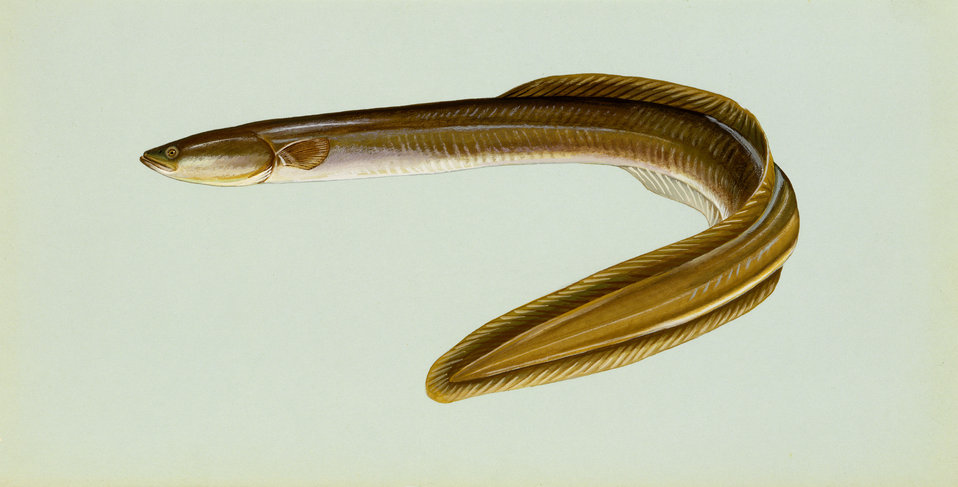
American eel